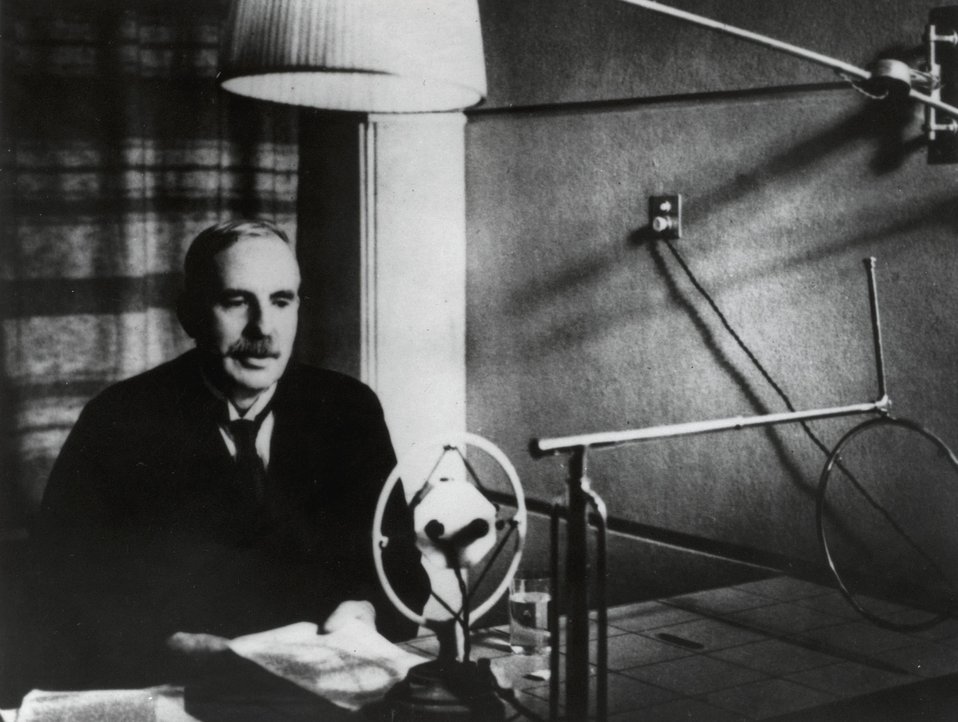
E. Rutherford lecturing in New Zealand in 1926.